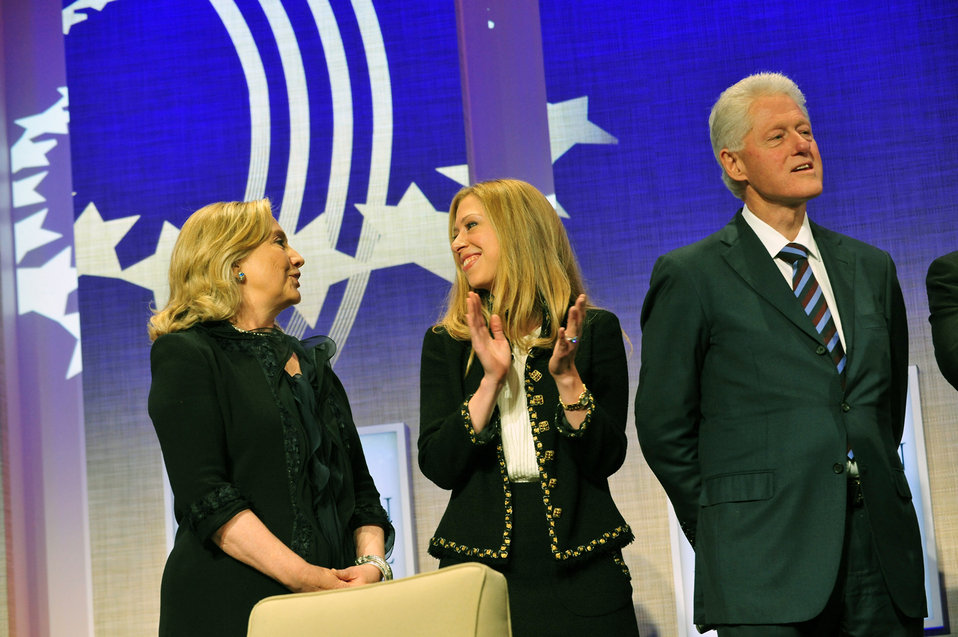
Secretary Clinton and Chelsea Clinton Participate in the Clinton Global Initiative Annual Meeting

U.S. Secretary of State Hillary Rodham Clinton and Chelsea Clinton participate in the Clinton Global Initiative Annual Meeting and hold a one-on-one “conversation” during the Closing Plenary, at the Sheraton Midtown Hotel in New York, New York, on September 22, 2011.